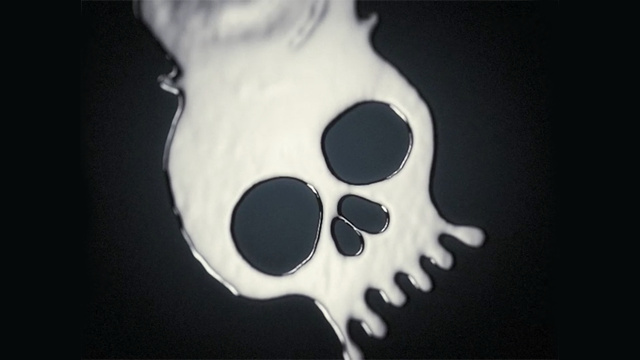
Don't Mess With Mercury

The U.S. Environmental Protection Agency and the U.S. Agency for Toxic Substances and Disease Registry launched its “Don’t Mess with Mercury” video in an effort to protect people -- especially children -- from the dangers of mercury.

To see the video, and for more information about mercury, visit: www.dontmesswithmercury.org/